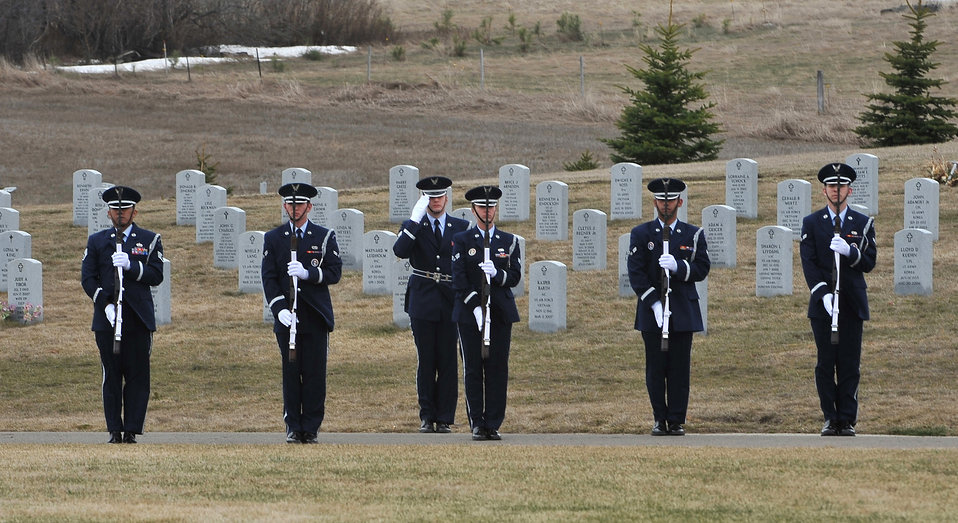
Airmen honor the fallen

The base honor guard from Minot Air Force Base, N.D., presents arms April 12, 2010, during the burial ceremony of a fallen Airman at the North Dakota Veterans Cemetery in Mandan, N.D.